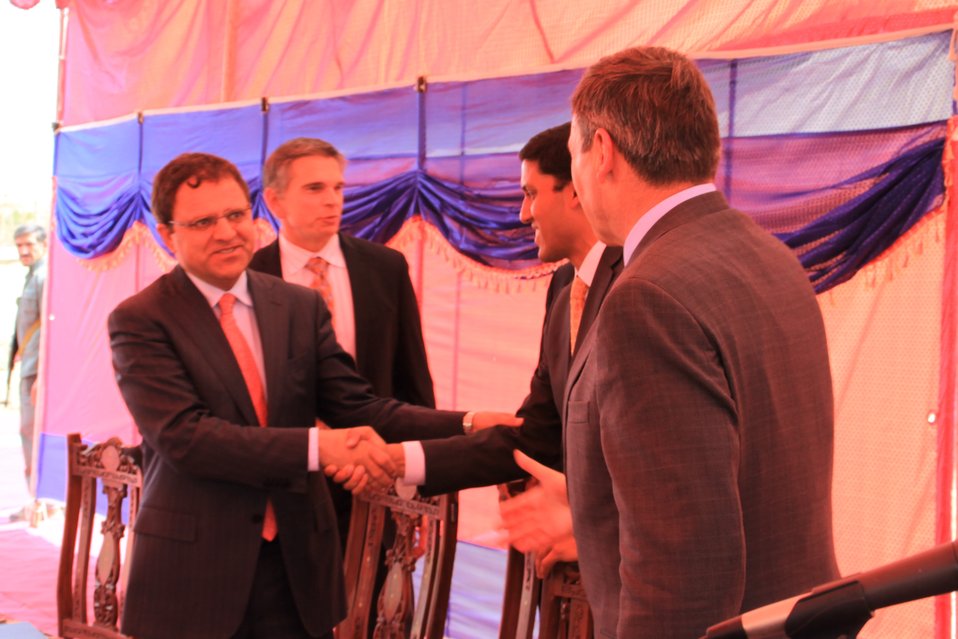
Badam Bagh Farm